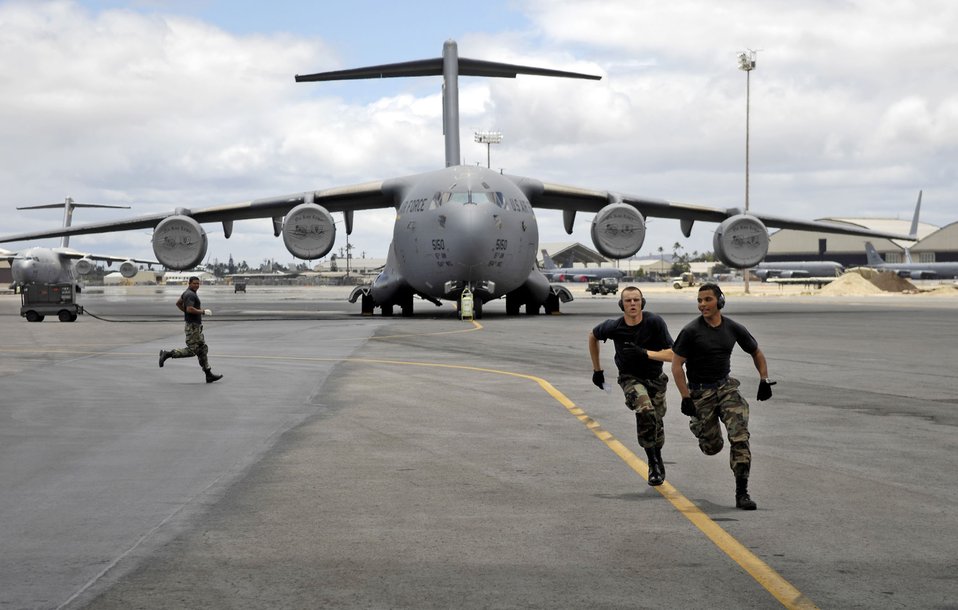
Hickam Rodeo team ready to go

Hickam Air Force Base, Hawaii, Rodeo team members sprint toward a C-17 Globemaster III July 13 during a Rodeo practice. Members from the 535th Airlift Squadron and 15th Logistics Readiness Squadron, Combat Mobility Element are practicing for upcoming Air Mobility Command Rodeo at McChord AFB, Wash.